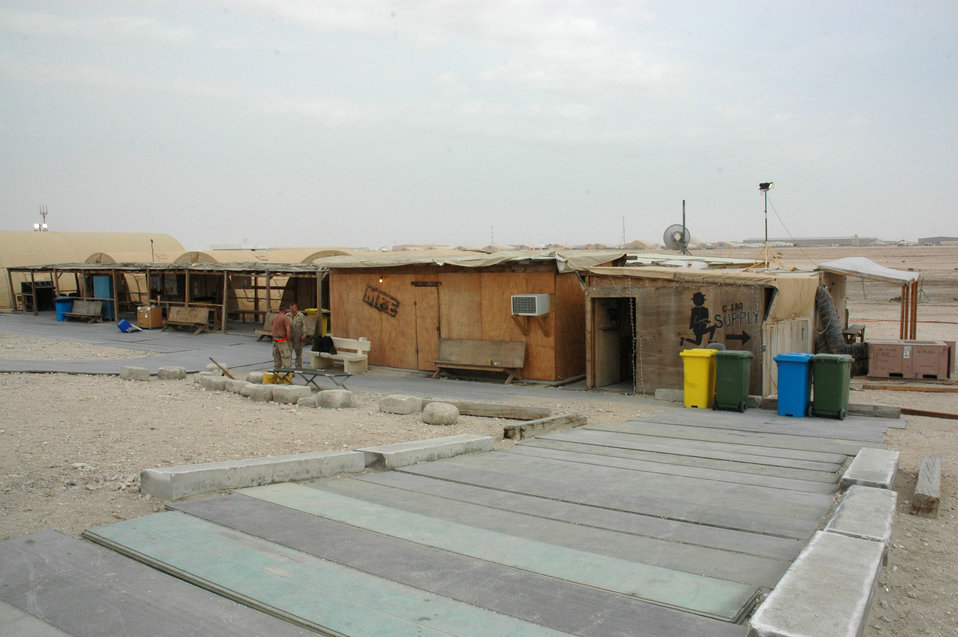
C-130 maintenance unit gets much needed upgrade